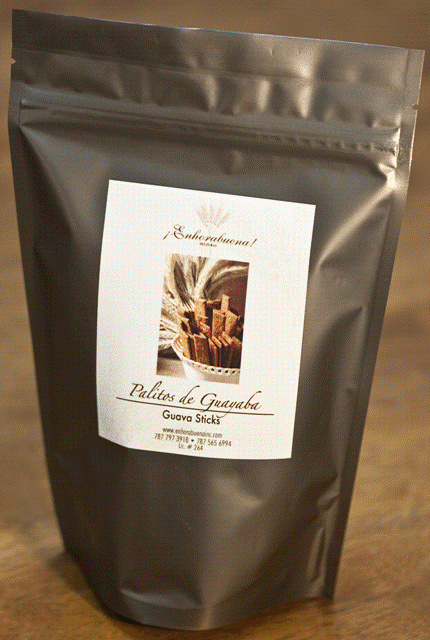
RECALLED - Guava Sticks

January 3, 2012 - Product Recall - Enhorabuena! Issues Allergy Alert On Undeclared Milk, Wheat, Tree Nuts, and Eggs in “Palitos de Guayaba” (Guava Sticks).